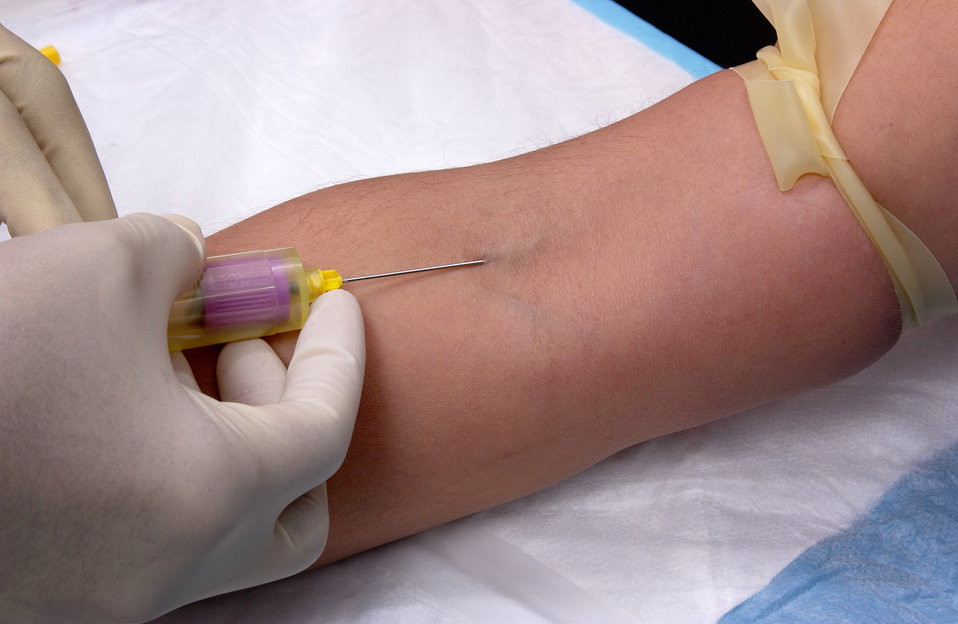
This image depicts a trained phlebotomist, i.e., a technician skilled in the practice of drawing blood from a patient, who was performing a percutaneous antecubital venipuncture into this patient's right antecubital vein. This image is the tenth in a series of 19 images outlining the steps involved in extracting blood during the venipuncture process.